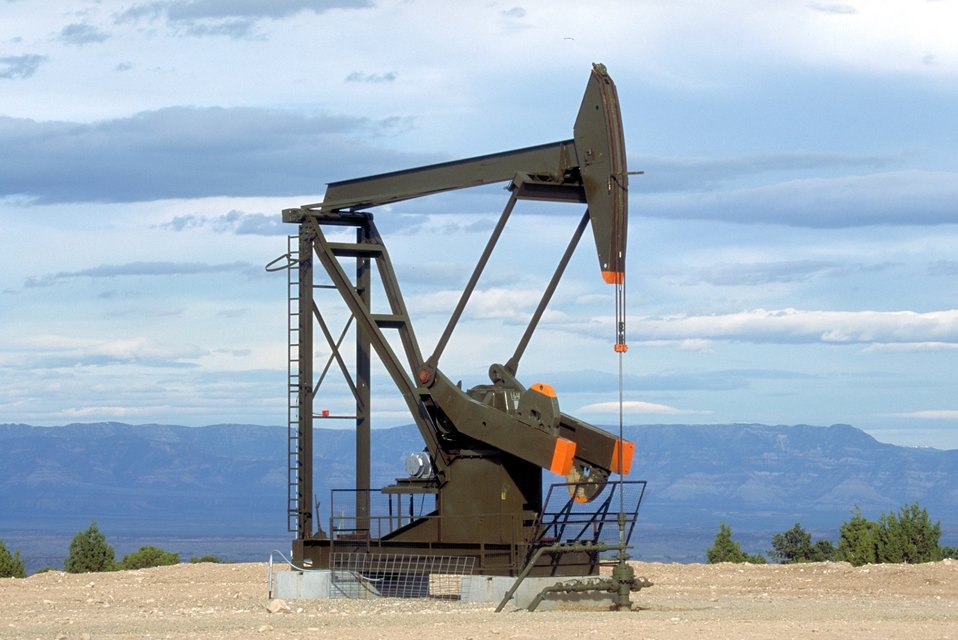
Pump unit producing coal bed methane near Price, Utah.